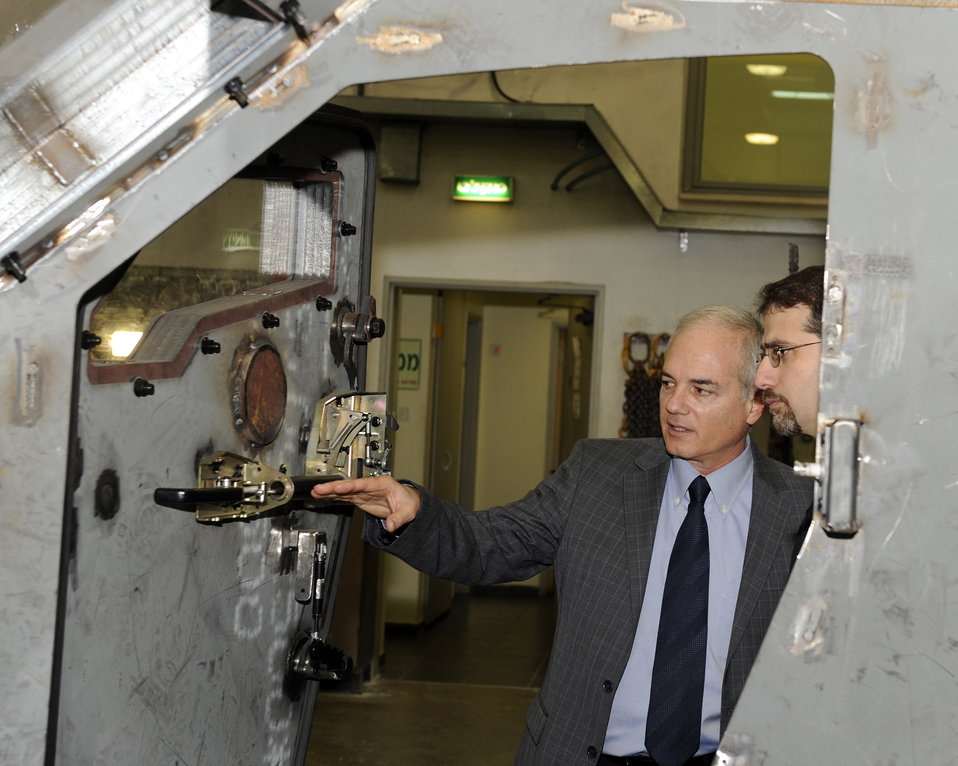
Ambassador Shapiro Visits the Kibbutz Sasa

U.S. Ambassador to Israel Daniel Shapiro visits the Kibbutz Sasa, home to the Plasan factory, in northern Israel on January 30, 2012. The Ambassador saw the full range of products, from reactive armor, to purpose built vehicles, to body armor. Plasan has delivered more than 8,000 armor kits to U.S units on active duty.